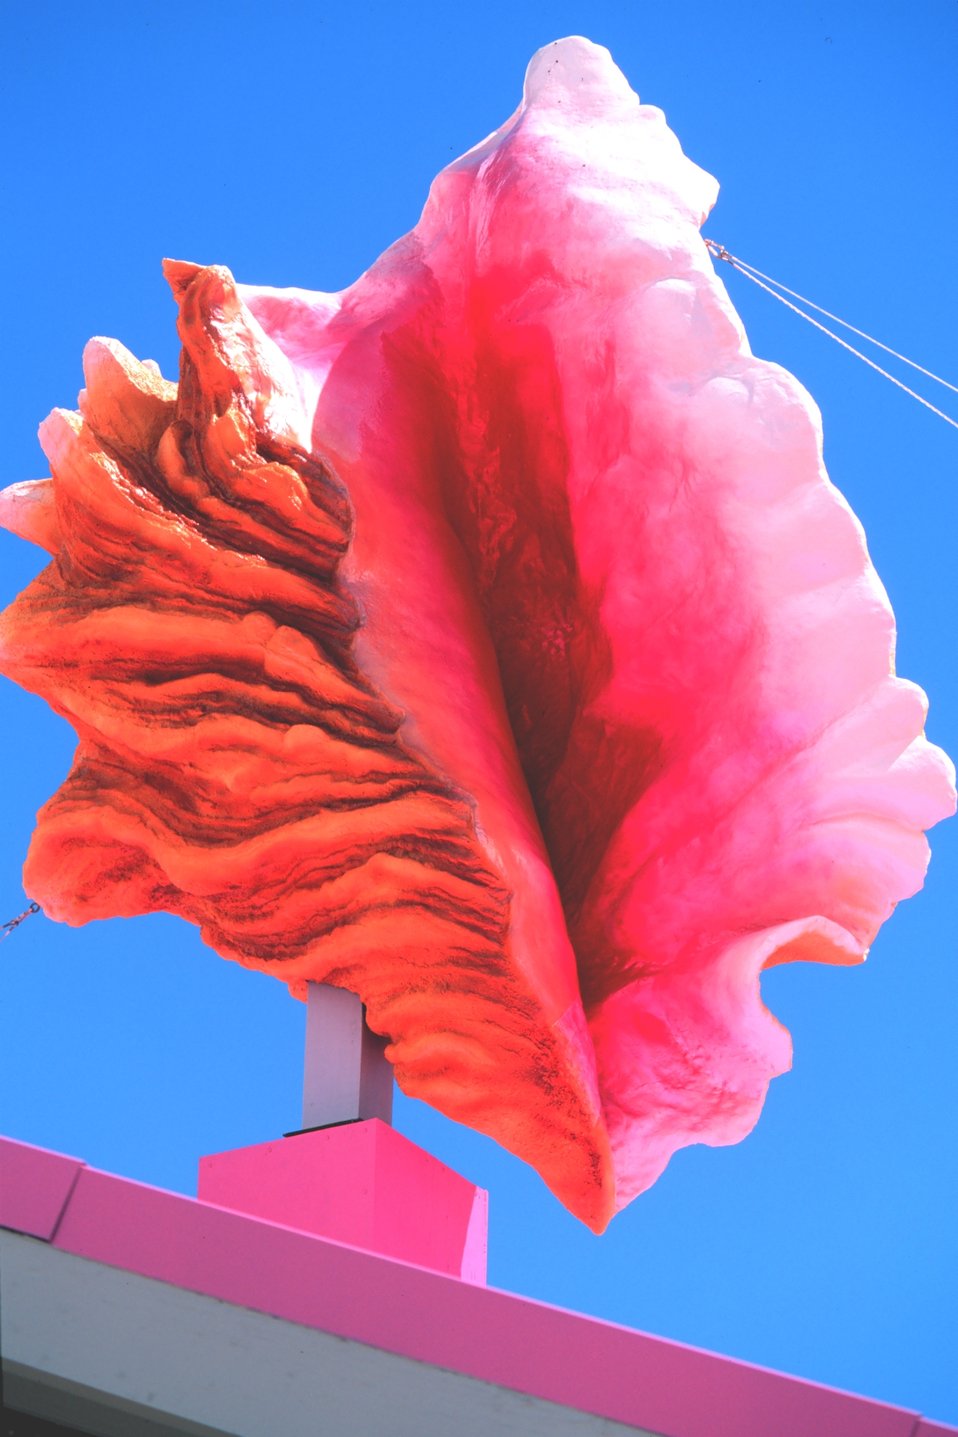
A really giant conch on the roof of the 'Hard Conch' restaurant